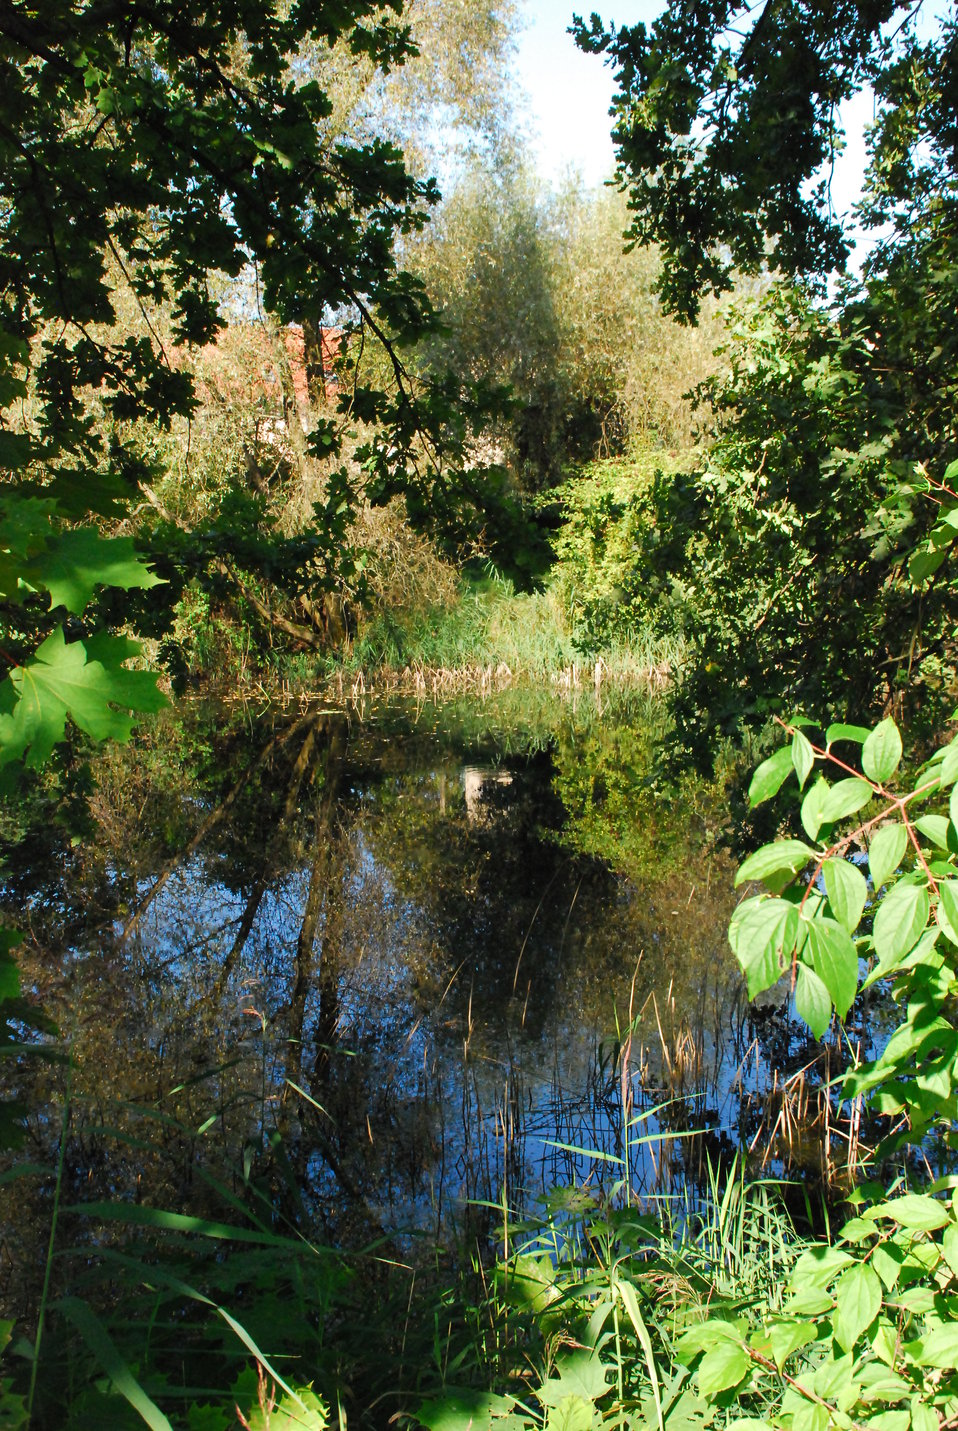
Theaterteich in Frankfurt (Oder), am ehemaligen Kleist-Theater, Friedrich-Ebert-Straße